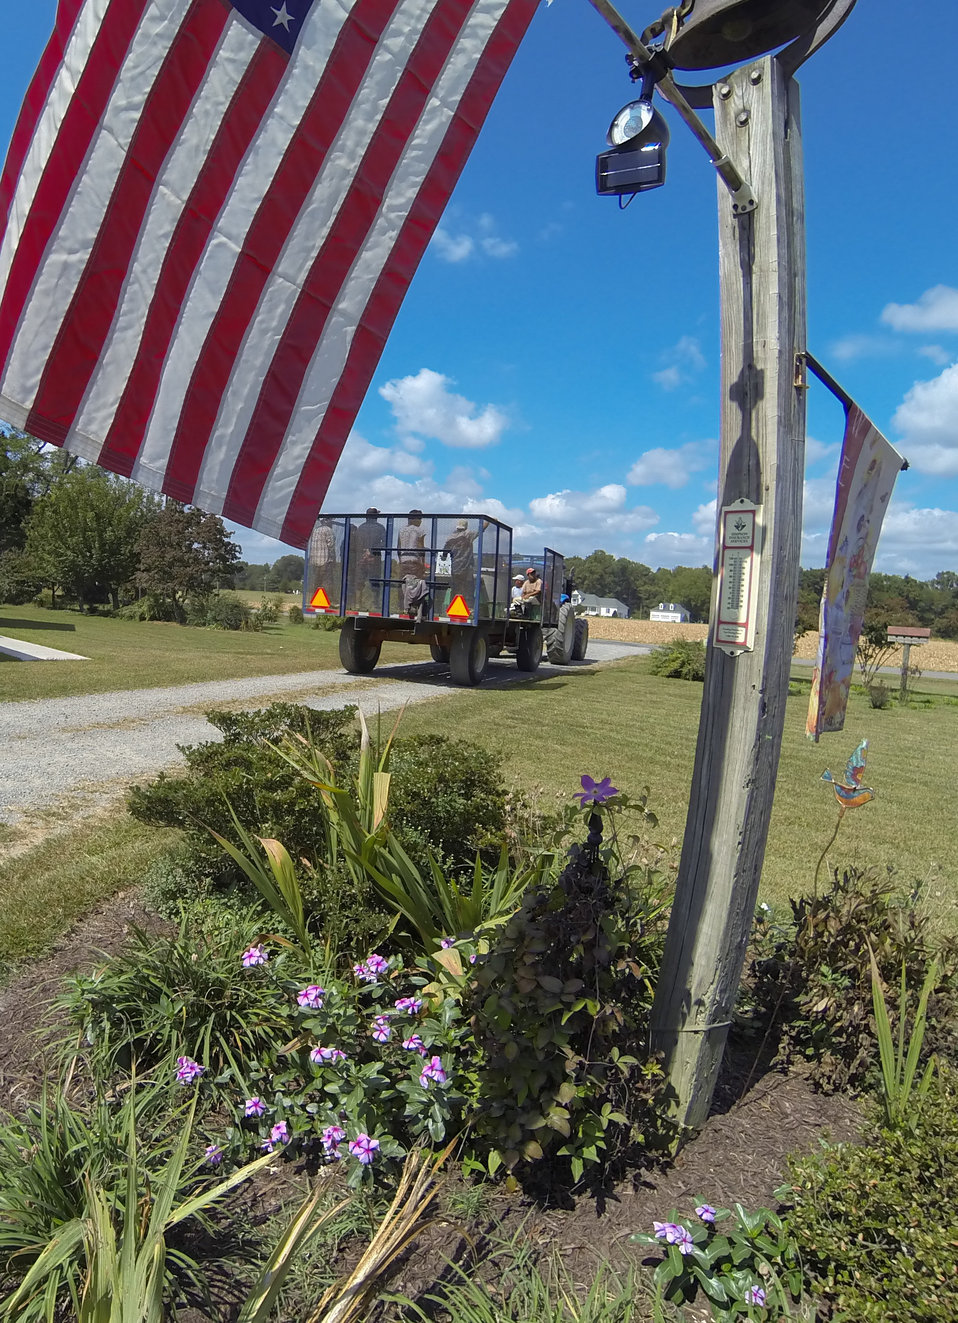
Migrant workers head back to the fields to pick squash, at Kirby Farms in Mechanicsville, VA on Friday, Sept. 20, 2013. Kirby Farms devotes 200 acres of the farm to eggplant, spinach, beets, tomato, jalapeno peppers, melons and a variety of greens. Soybeans and small grain are grown on the remaining 300 acres. The fertile Virginia soil and their management practices, allows Kirby Farms to double and triple crop fields with rotational crop selection. Wholesalers, who buy from this farm, sell the produce to major supermarkets in the Mid-Atlantic region, from North Carolina to Maryland. Restaurants in the local area prepare and serve their harvest to patrons in the Greater Richmond, VA Region.